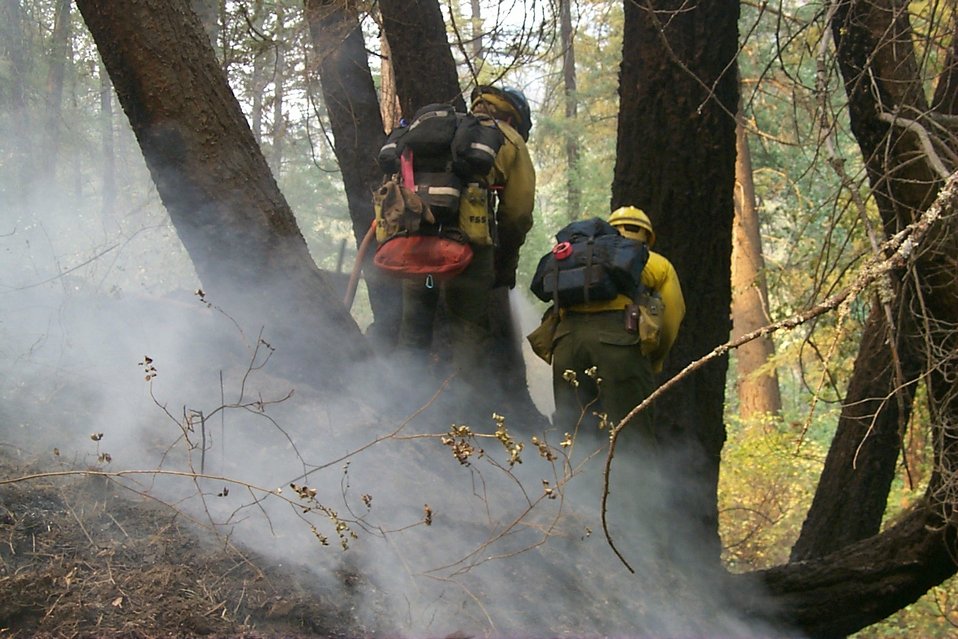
Line crew Fire Clearwater Fire Salmon Field Office USRD Upper Snake River District